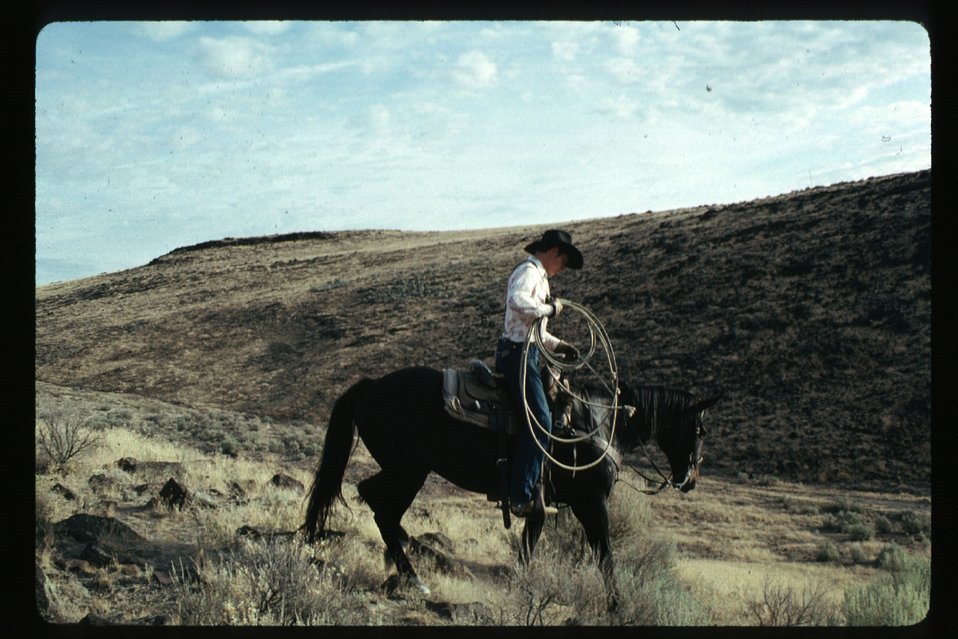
Wild horse roundup Wild Horse and Burro Adoption Program LSRD Lower Snake River District